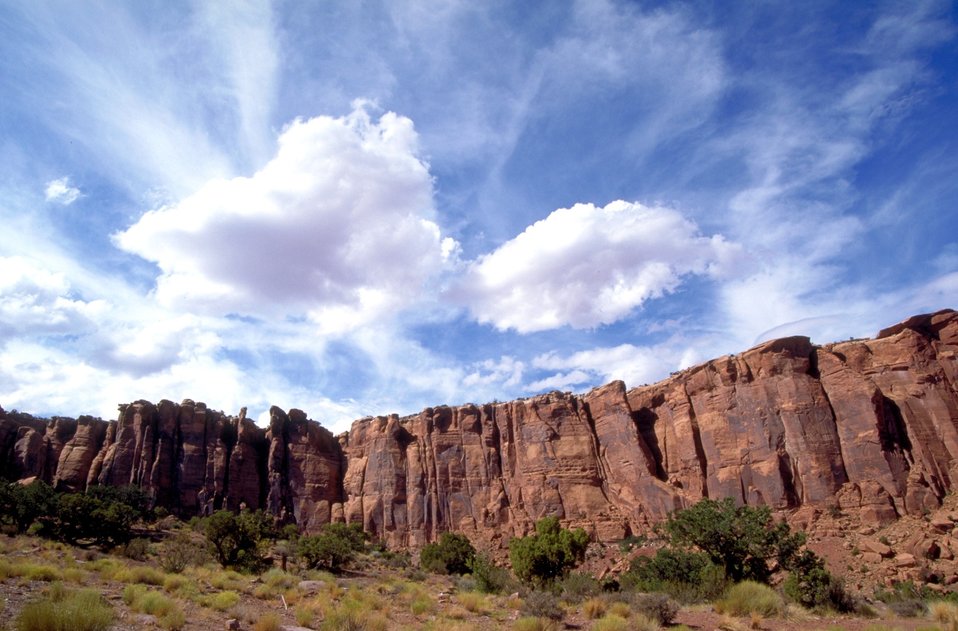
Canyon Rim slickrock with clouds near Moab, Utah.